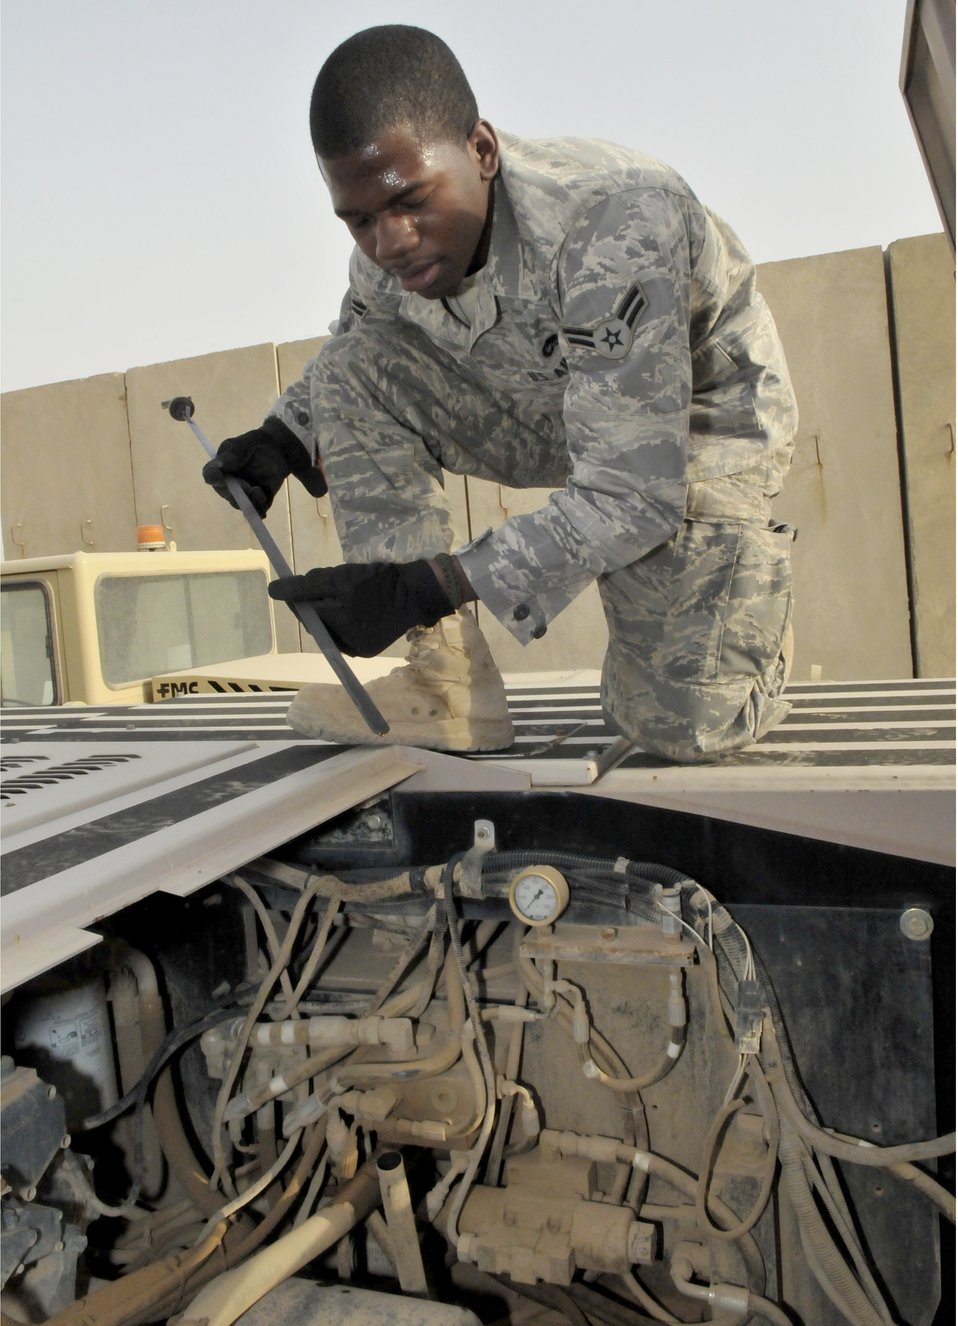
C-17 maintenance crew

Airman 1st Class Christopher Atkins checks the oil level on an aircraft tow vehicle July 12, 2010, at Joint Base Balad, Iraq. Airman Atkins, a native of Fayetteville, N.C., is deployed from Joint Base McGuire-Dix-Lakehurst, N.J.